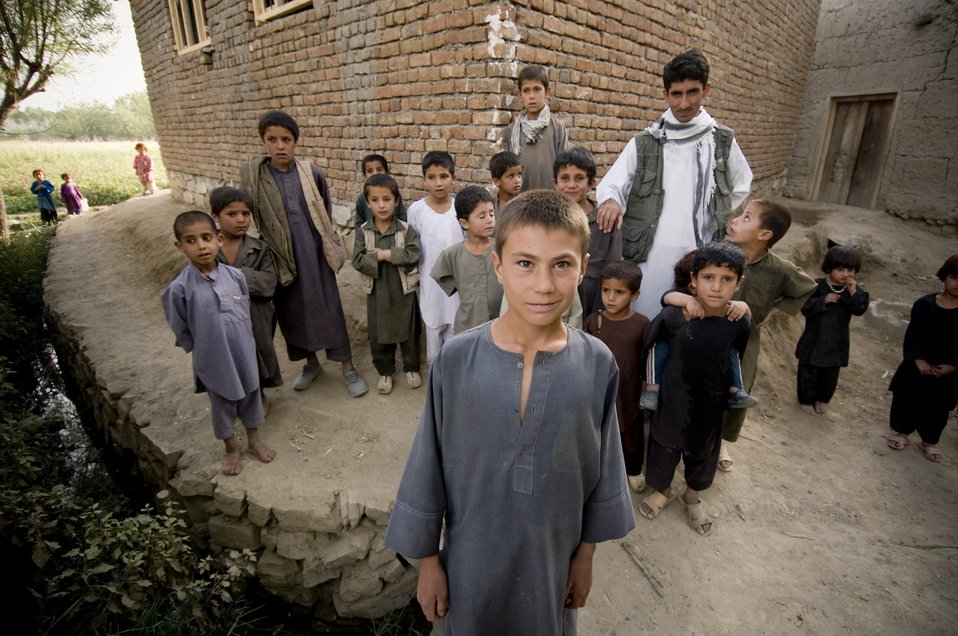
Village visit

Many Afghan children in a village come out of their homes to see coalition forces visit their village Sept. 16. The villagers were happy to see them and welcomed photos.